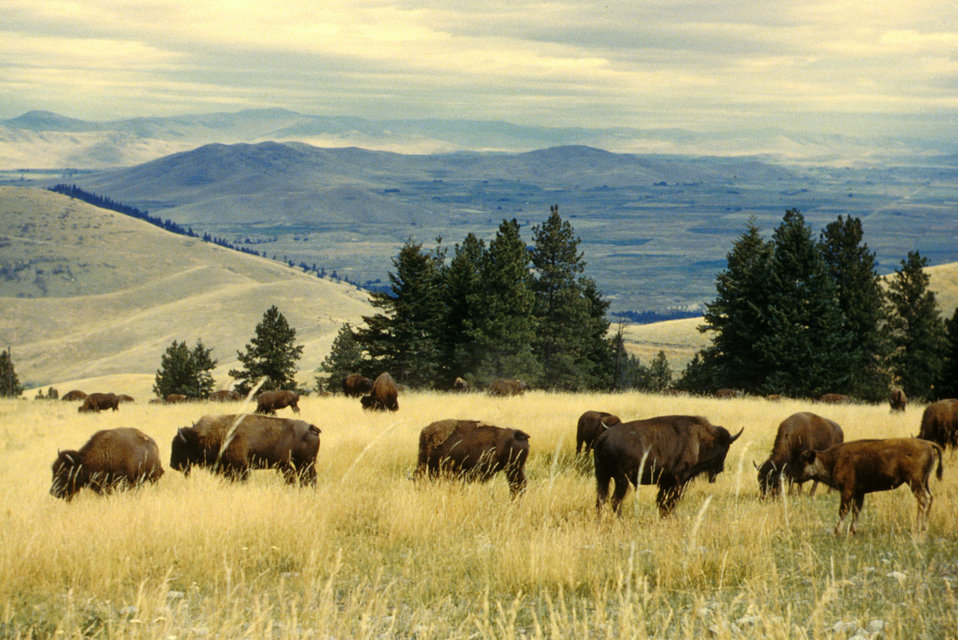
Bison herd grazing at the National Bison Range

Bison herd grazing on the range at the National Bison Range in Montana.